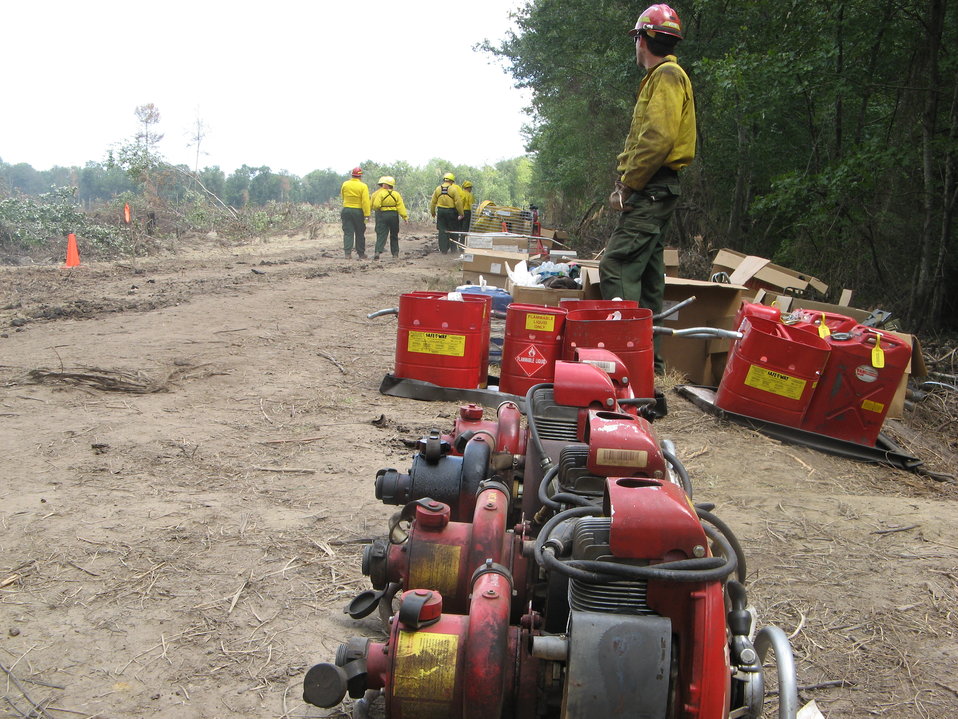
Mark 3 pumps

Suffolk, VA, August 2011: Water pumps and fuel line the road next to the 43-acre Bull North spot fire at the Lateral West Fire. The Bull North Fire is on Dismal Swamp State Park. About 200 acres of Park land burned in the 6,300-acre Lateral West Fire. Most of the fire was on Great Dismal Swamp National Wildlife Refuge.